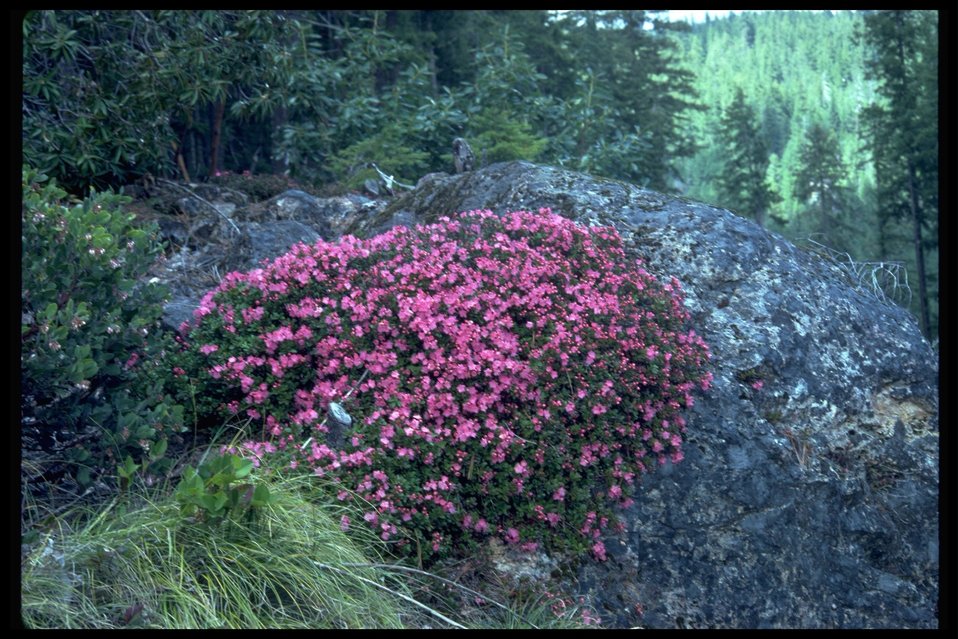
Farshot of North Umpqua kalmiopsis (Kalmiopsis fragrans).